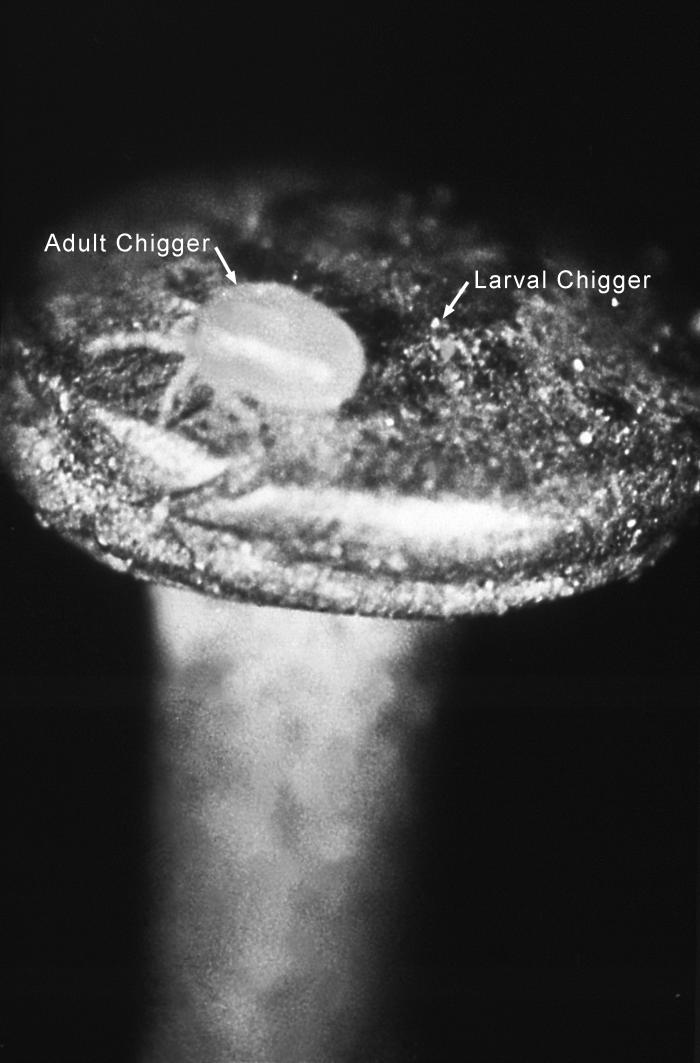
This is an image that was donated to the Centers for Disease Control (CDC) by Dr. Cornelius B. Philip at the National Institute of Allergy and Infectious Diseases' (NIAID) Rocky Mountain Laboratories (RML) in 1965. It depicts an adult and a larval chigger poised on the head of a pin.